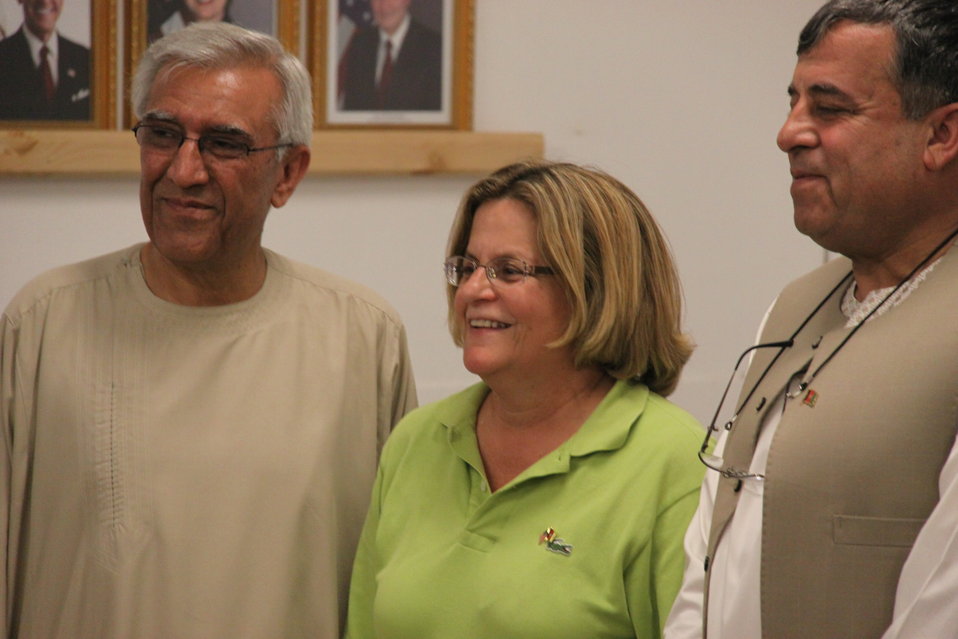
Meeting with Local Leaders in Kandahar